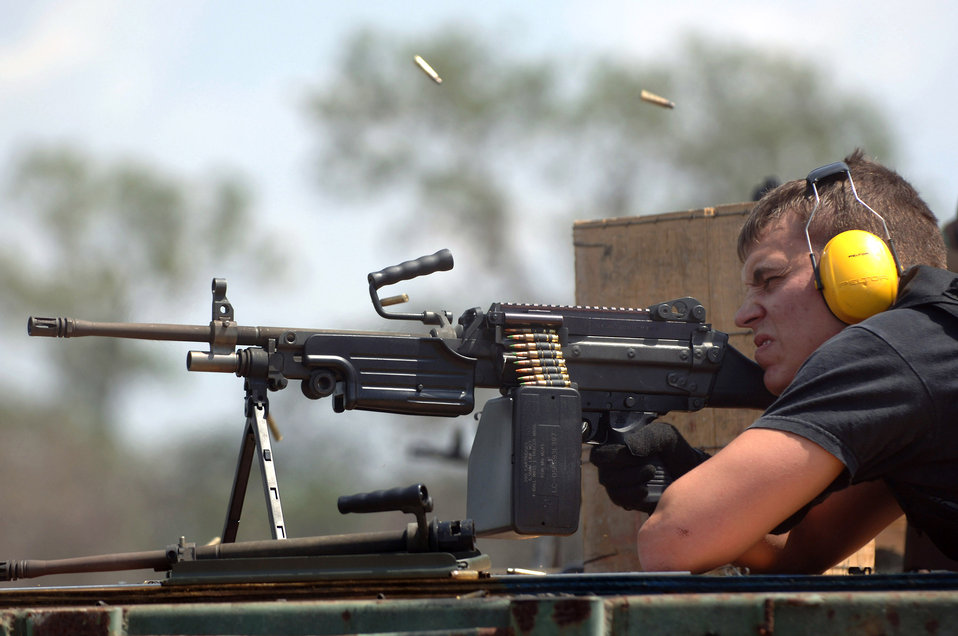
Combat arms training

Senior Airman Tyler Strine fires an M249 Squad Automatic Weapon during a combat arms training and maintenance class at Avon Park Air Force Range, Fla., on Thursday, May 18, 2006. Airman Strine is assigned to the 6th Security Forces Squadron at MacDill Air Force Base, Fla. Security forces Airmen were at the range to train for upcoming deployments.